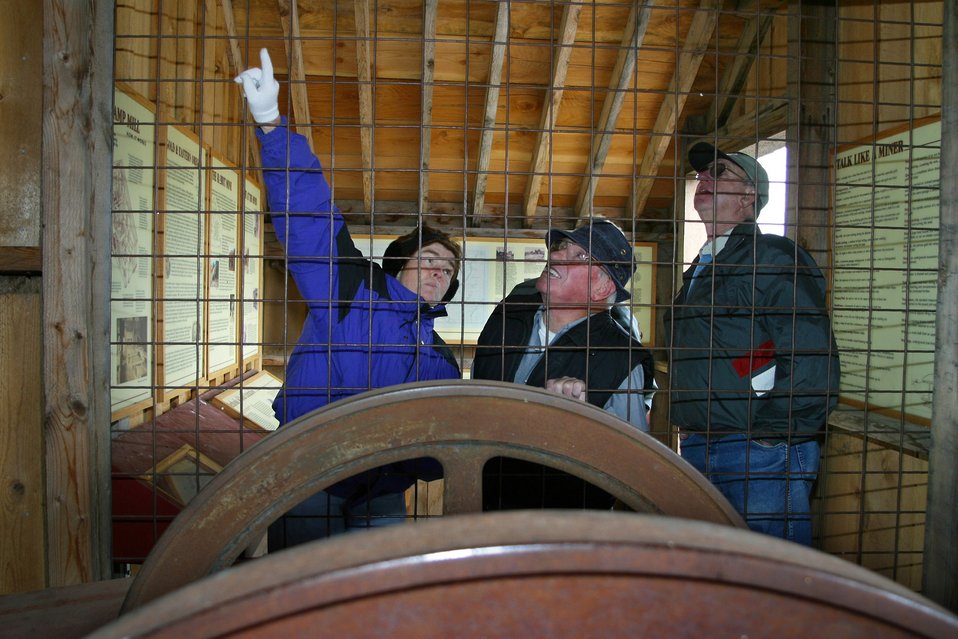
A replica of the Rabbit Mine 1926 stamp mill near Greenhorn in the Blue Mountains of eastern Oregon. It is used to interpret the importance of mining in western history, and the relationship of gold mining to the westward migration story.